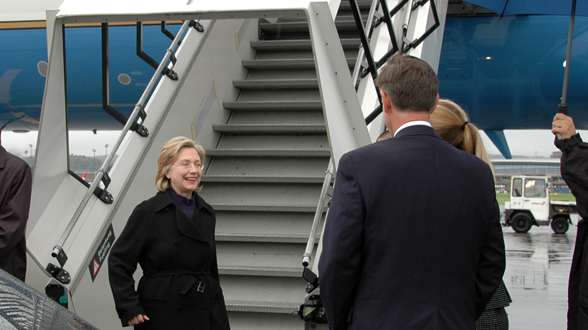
Secretary Clinton Arrives in Zurich

U.S. Secretary of State Hillary Rodham Clinton is greeted by U.S. Ambassador to Switzerland Donald S. Beyer and Ms. Alexandra Baumann (Federal Department of Foreign Affairs) during her arrival in Zurich, Switzerland October 9, 2009.